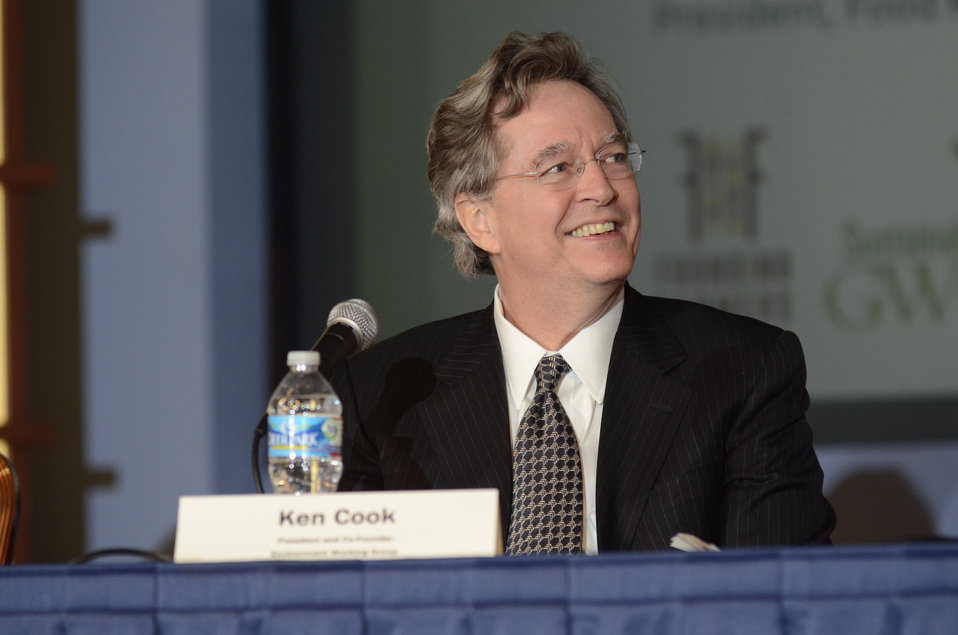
Ken Cooke was a member of the panel for 'Shaping the Farm Bill for a Sustainable Future.' Forum at The Trachtenberg School of Public Policy and Public Administration, George Washington University in Washington, D.C., on Thursday, March 1, 2012.